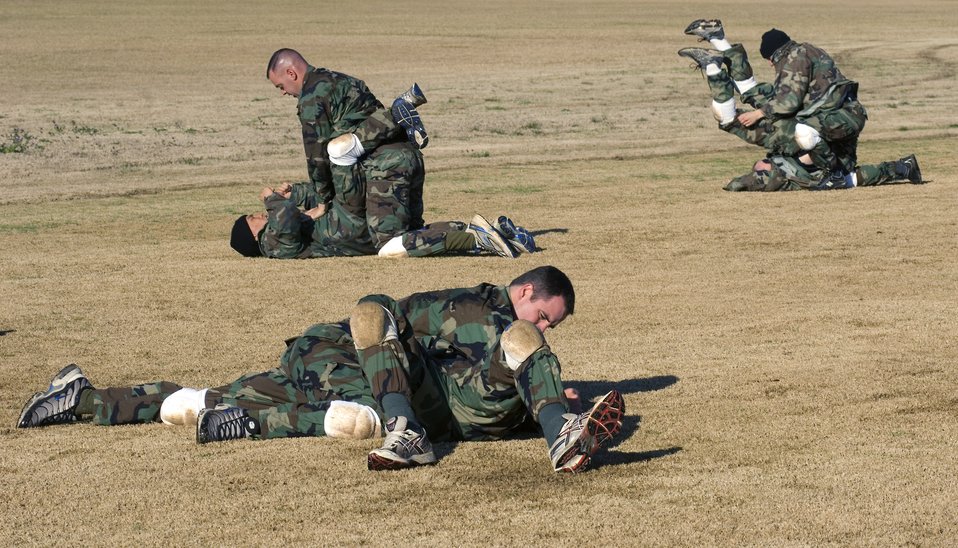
OTS begins new close combat course

Air Force officer trainees practice close-combat tactics Feb. 8 during the new Air Force Combative Program field exercise at the Officer Training School at Maxwell Air Force Base, Ala. All officer accession students are being given 11 hours of combative-skills training. Trainees learn ground fighting and basic jujitsu-style grappling moves to provide them with the confidence they need to defend themselves in combat situations.